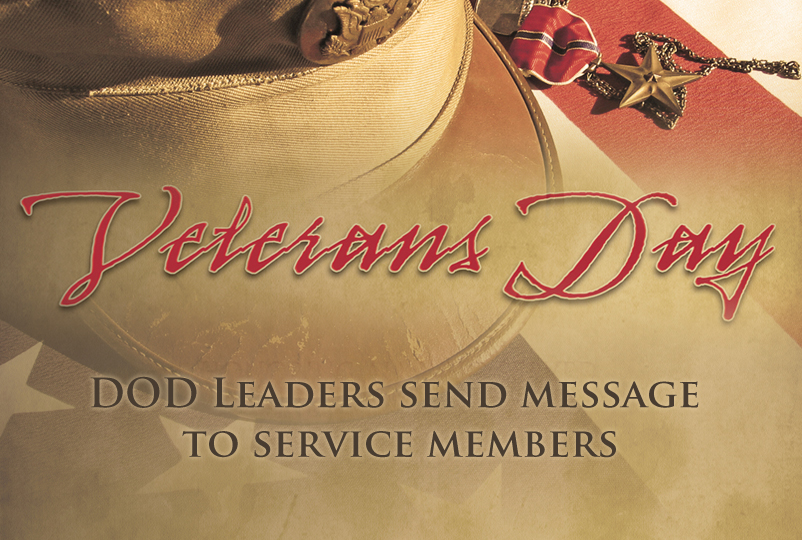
DOD Veterans Day Message